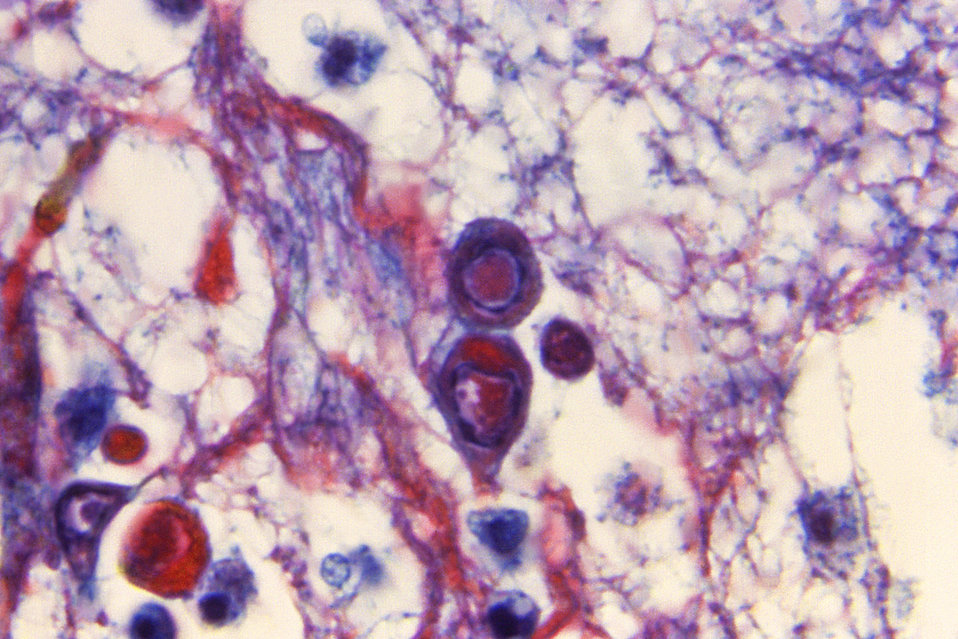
Under a relatively high magnification of 1200X, this photomicrograph reveals some of the cytoarchitectural histopathologic changes which you'd find in a human skin tissue specimen that included a chickenpox, or varicella zoster virus lesion.